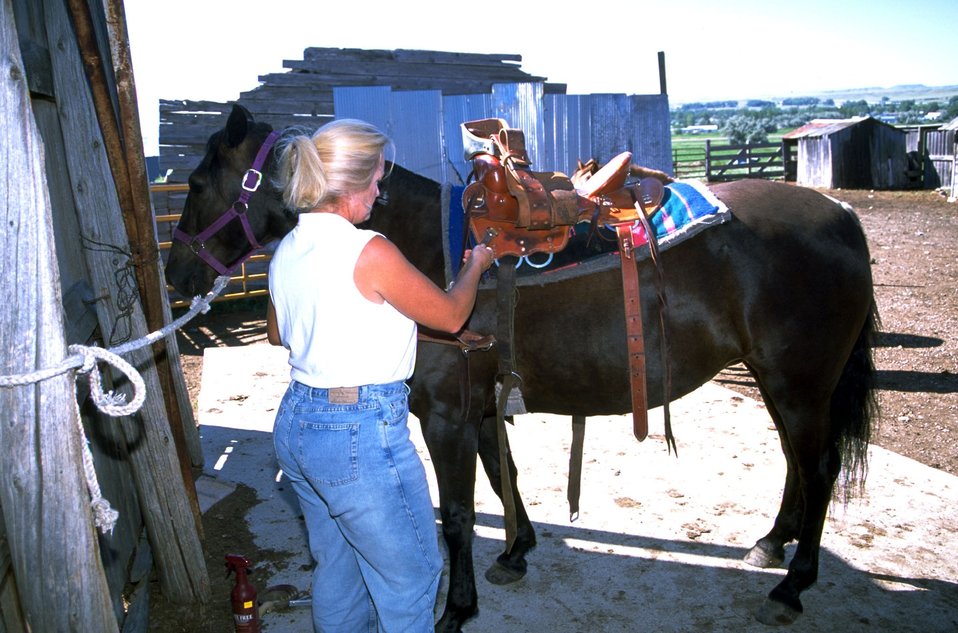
Saddled Adopted Horse